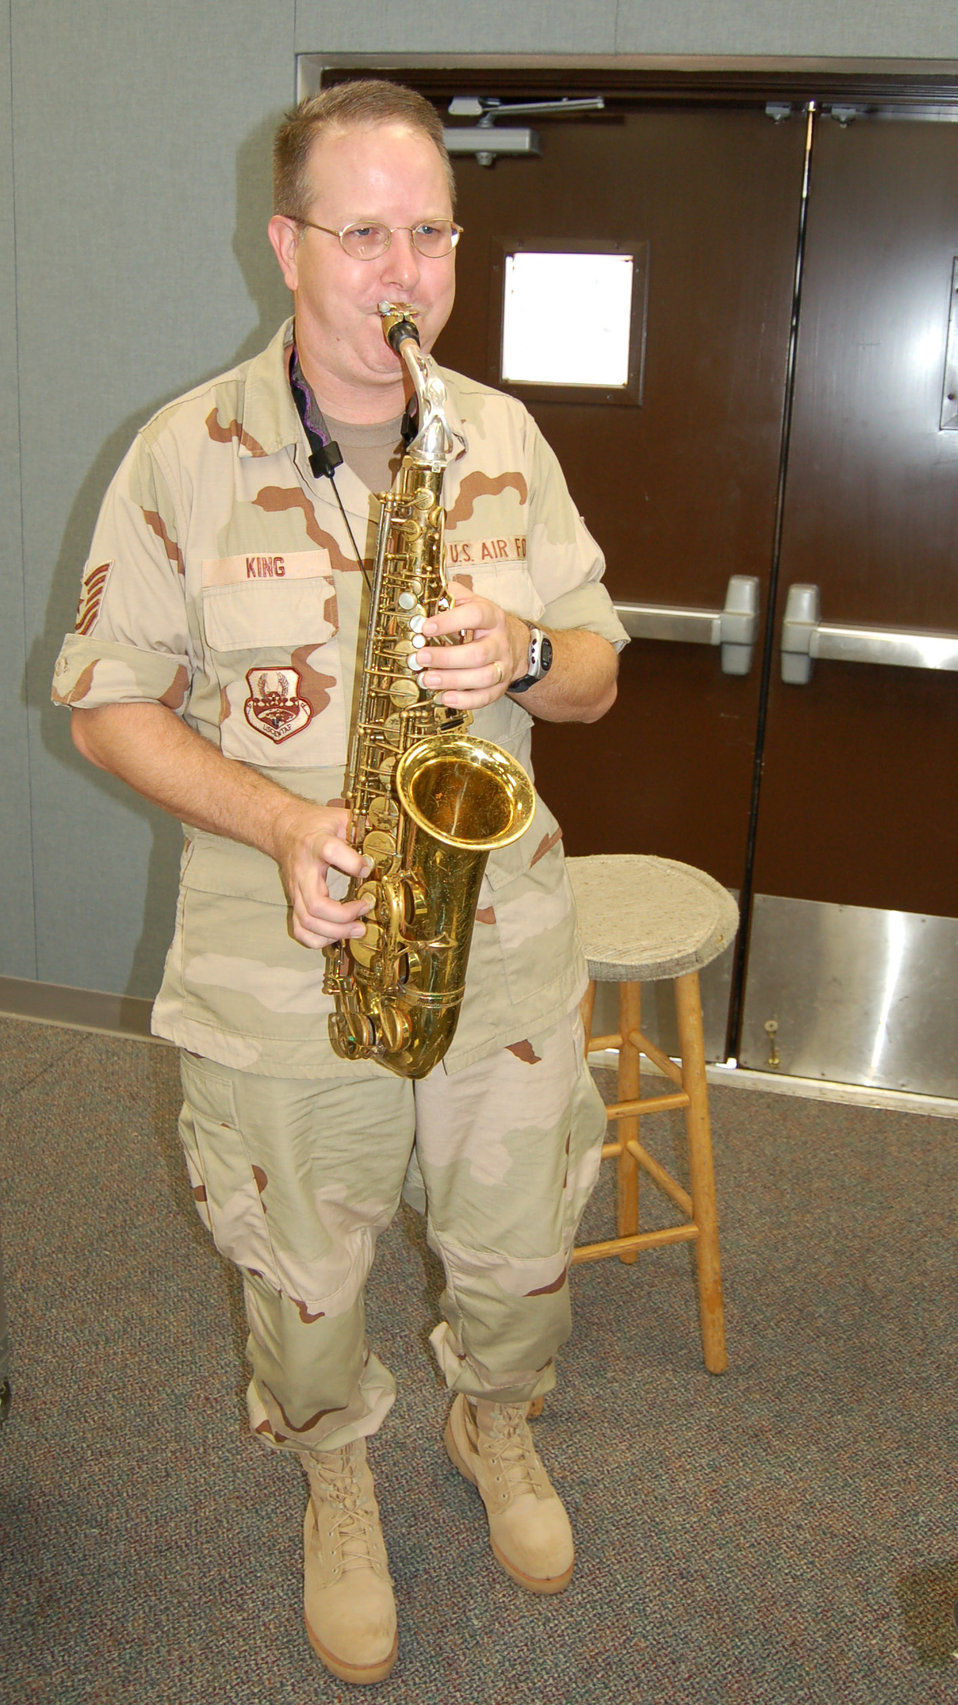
AF band targets forward bases for morale shows

Tech. Sgt. William King rehearses Oct. 4. He is with the Air Force Band of the West's Top Flight rock band at Lackland Air Force Base, Texas. The band will be deploying soon to Southwest Asia.